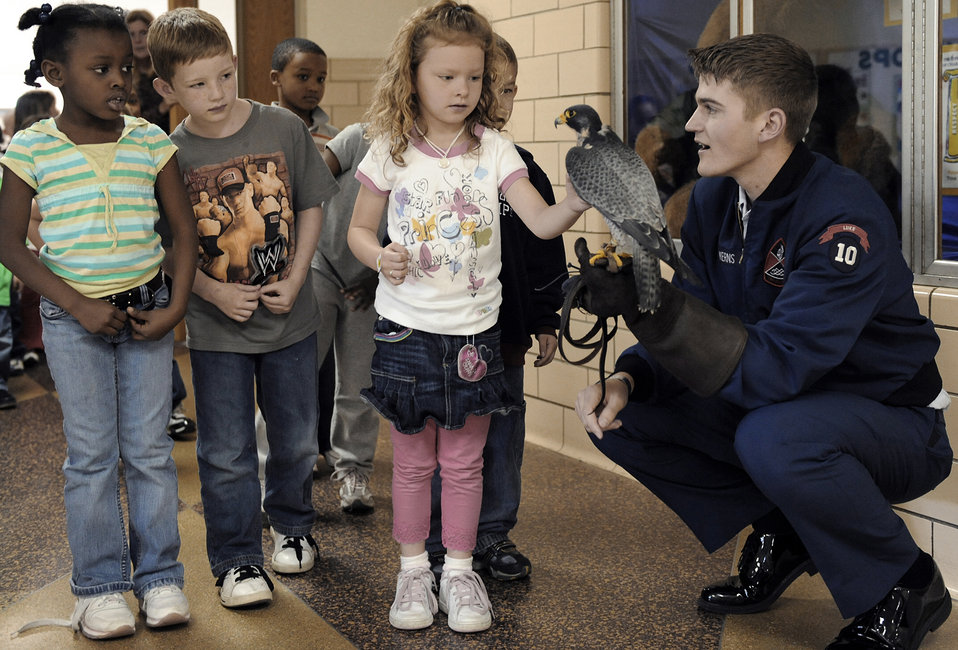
You sure he's tame?

Air Force Academy Cadet Ryan Kerns shows